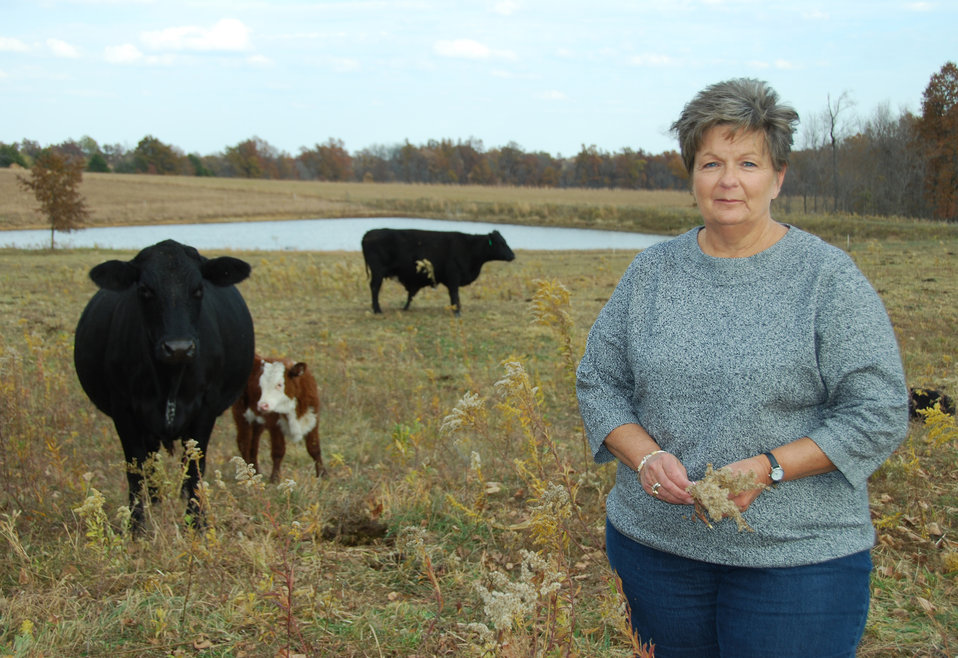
Beginning farmer Ann Whitehead on her 100 acres of agricultural land near Wellsville, MO.